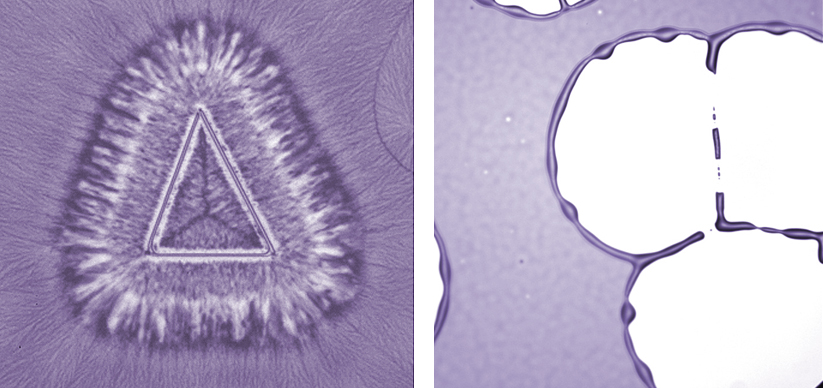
Crystallization (left) occurs as polymers harden into thin films, which are used widely in electronics technology. But when dewetting also occurs, as at the grain boundary corners in (right), inhomogeneities in the film can degrade performance. NIST scientists found that temperature determines which process dominates film formation, and that keeping certain angles between crystallization fronts can prevent dewetting.